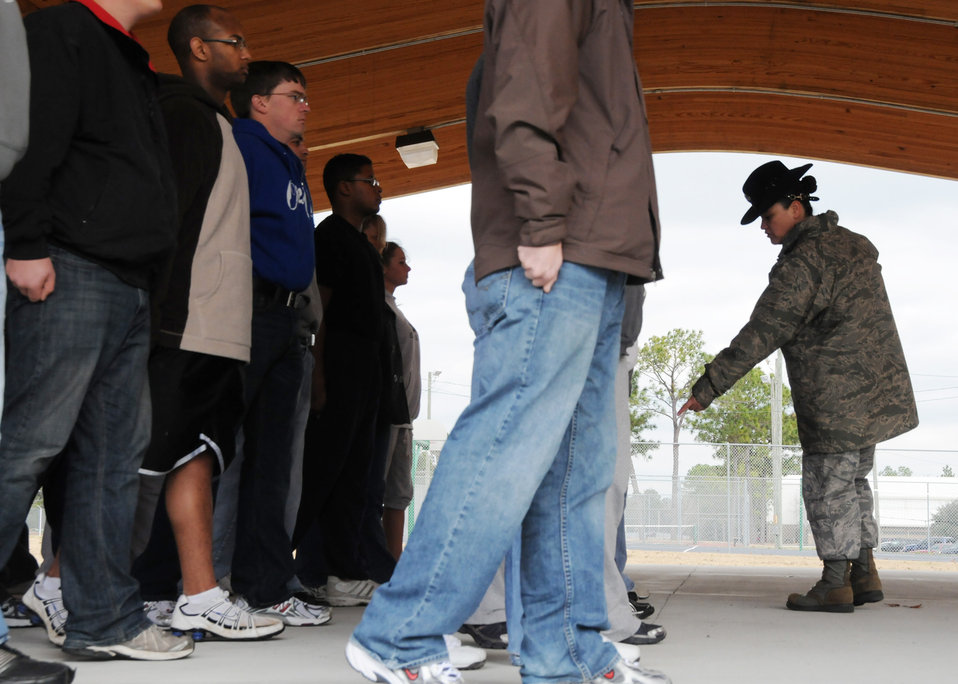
Former BMT instructors give new Reserve recruits glimpse at 'Basic'

Master Sgt. Tiffany Lopez directs a recruit to adjust their feet while practicing facing movements Feb. 6, 2010, at Duke Field. Sergeant Lopez and her husband, Tech. Sgt. Raul Lopez both former active-duty military training instructors at Lackland Air Force Base, Texas, volunteered their time to help new reserve recruits prepare for basic training during the drill weekend here. The husband and wife team spent four years instructing new trainees at Lackland, graduating 25 flights from Basic Military Training. Sergeant Tiffany Lopez is assigned to the 96th Force Support Squadron. Sergeant Raul Lopez is assigned to the 96th Logistics Readiness Squadron.